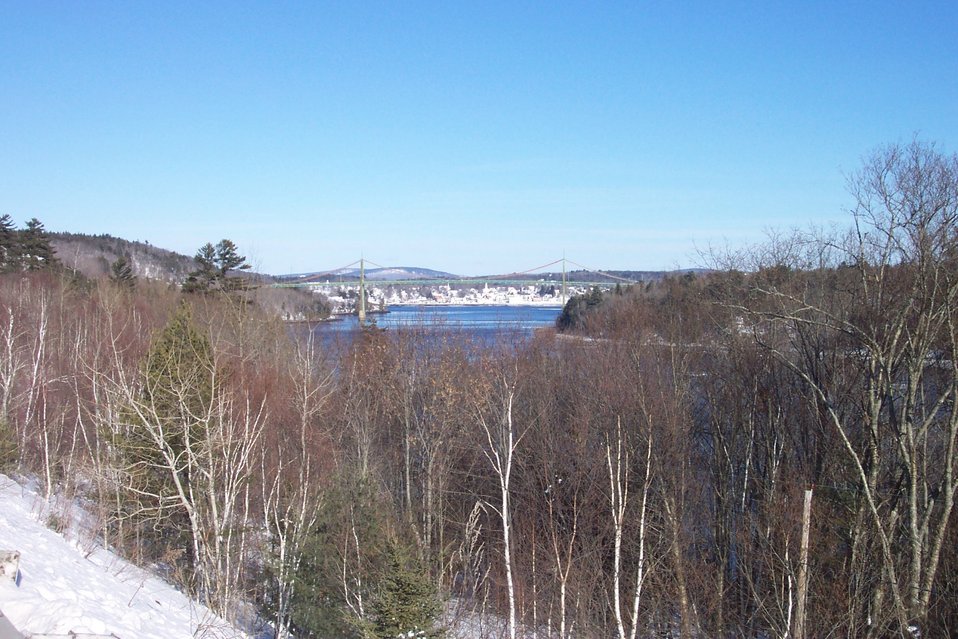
The Waldo-Hancock suspension bridge with Bucksport in the background.